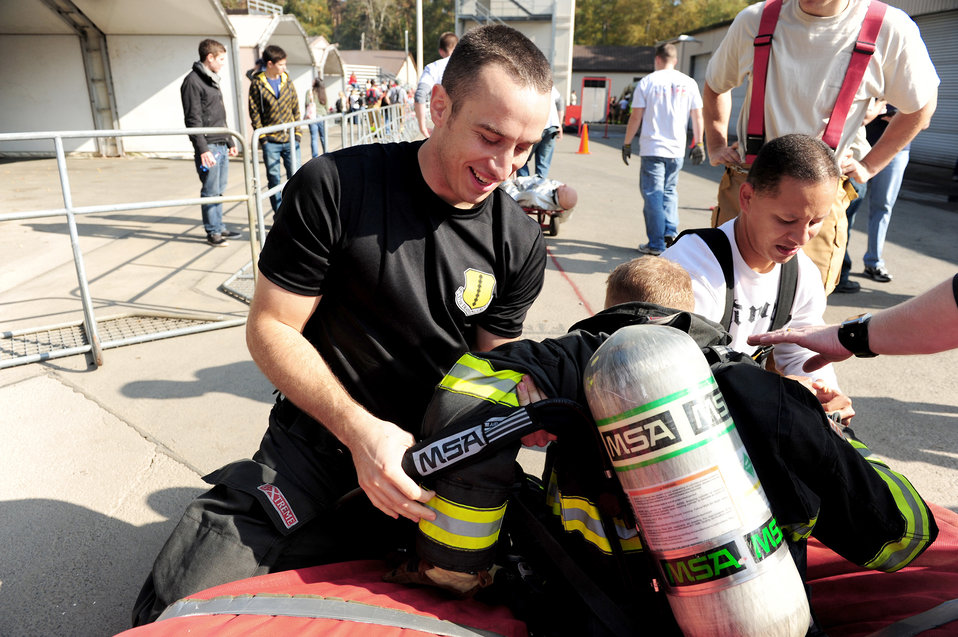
2010 USAFE Combat Firefighter Challenge1

U.S. Air Force firefighters from the 435th Construction and Training Squadron help a teammate doff his firefighting personal-protective equipment during the Firefighter Combat Challenge Oct. 9, 2010 at the 435th CTS contingency training site at Ramstein Air Base, Germany. The competition consisted of a timed, five-part obstacle course.